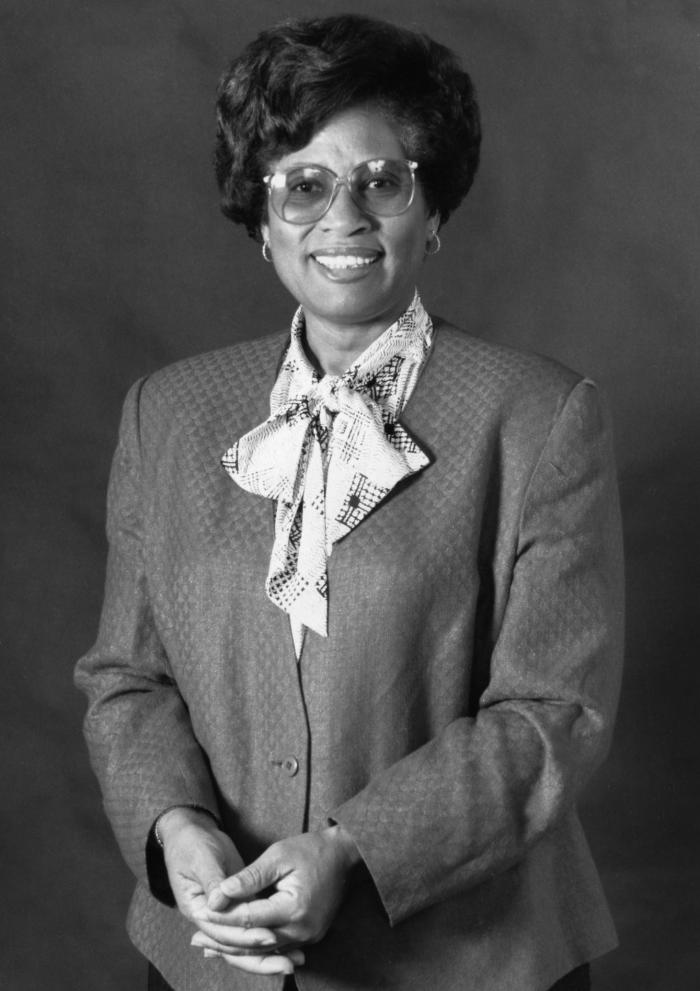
Taken during a visit to the Centers for Disease Control (CDC) in order to speak at the 1991 Joseph W. Mountin Lecture, this photographic portrait featured former United States Surgeon General M. Joycelyn Elders, M.D. (1993-1994).